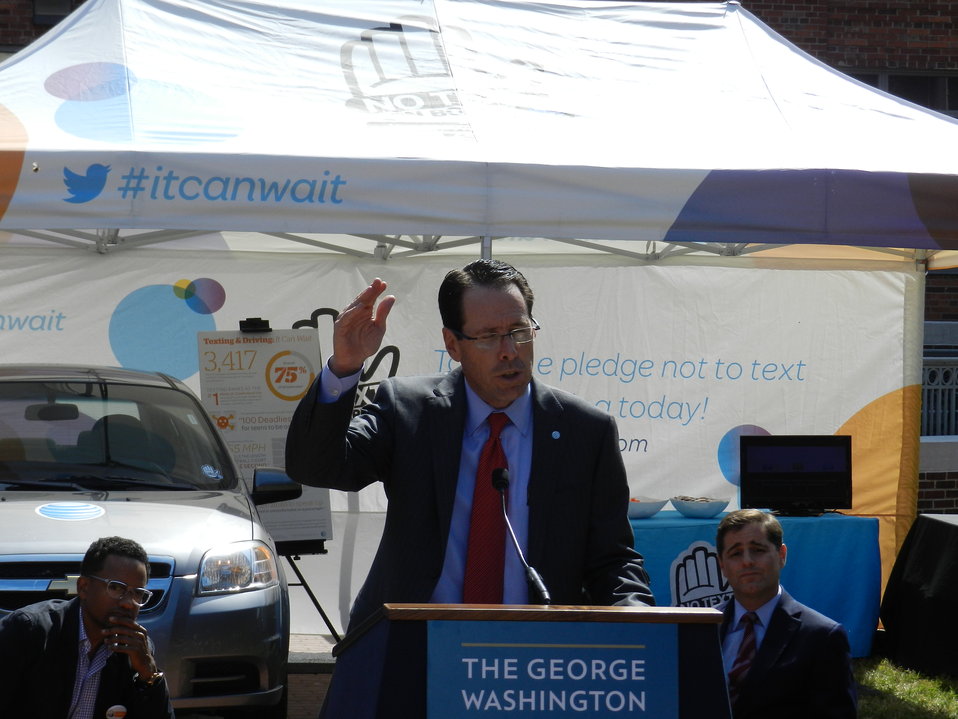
It Can Wait Pledge Day 9.19.12

Randall Stephenson, Chairman & CEO, AT&T speaking at the ‘No Text On Board’ Pledge Day Event, The George Washington University, Washington, D.C. September 19, 2012